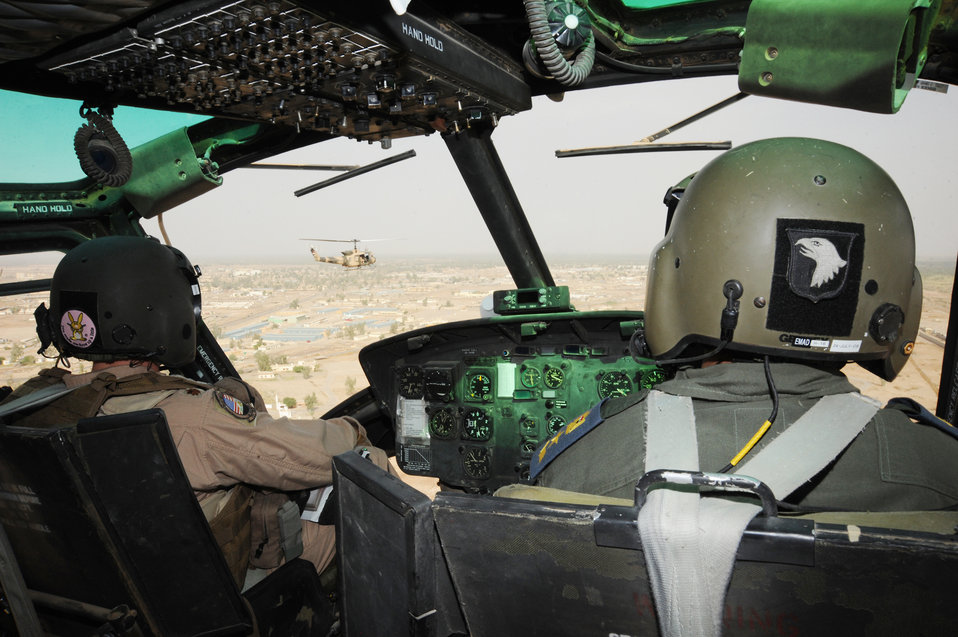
One maneuver at a time

Maj. Jack Swinehart (left) demonstrates aerial formation flying procedures for an Iraqi pilot over Camp Taji, Iraq, Oct. 8, 2009. The Iraqi students learn approaches, take-offs and landings. Major Swinehart is an 721st Air Expeditionary Advisory Squadron UH-1H pilot, and is deployed from Fort Rucker, Ala. U.S. Air Force instructor pilots assigned to the 721st AEAS train and advise their students around the clock.